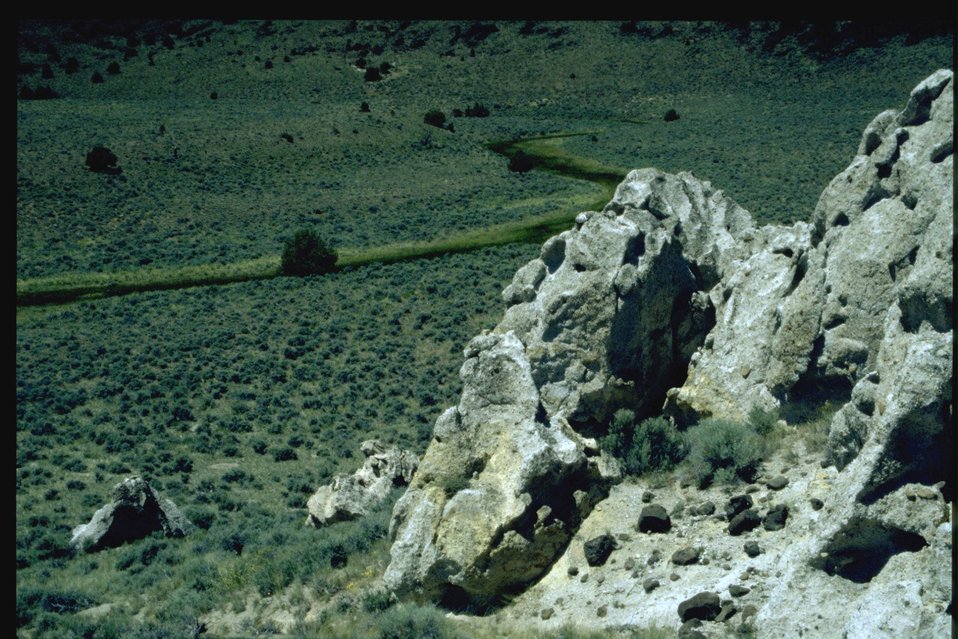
Scenic view of Guano Creek.